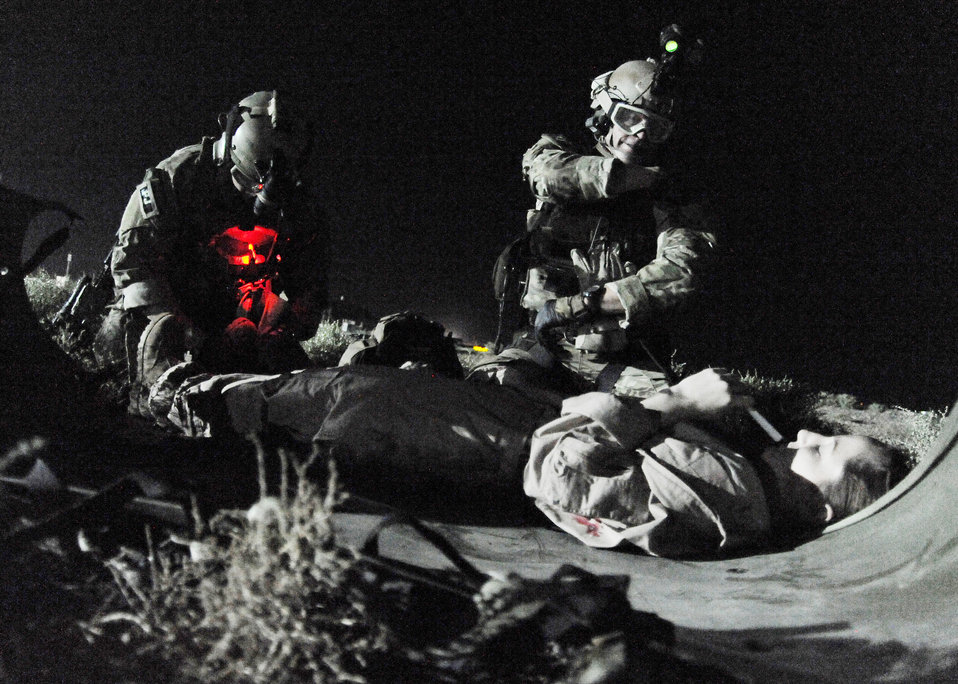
Practice makes perfect

Staff Sgt. Joshua Kruse and Senior Airman Nate Simonson administer aid to a